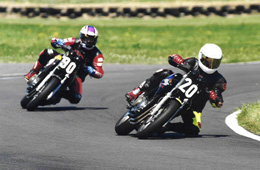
Personal digital photo